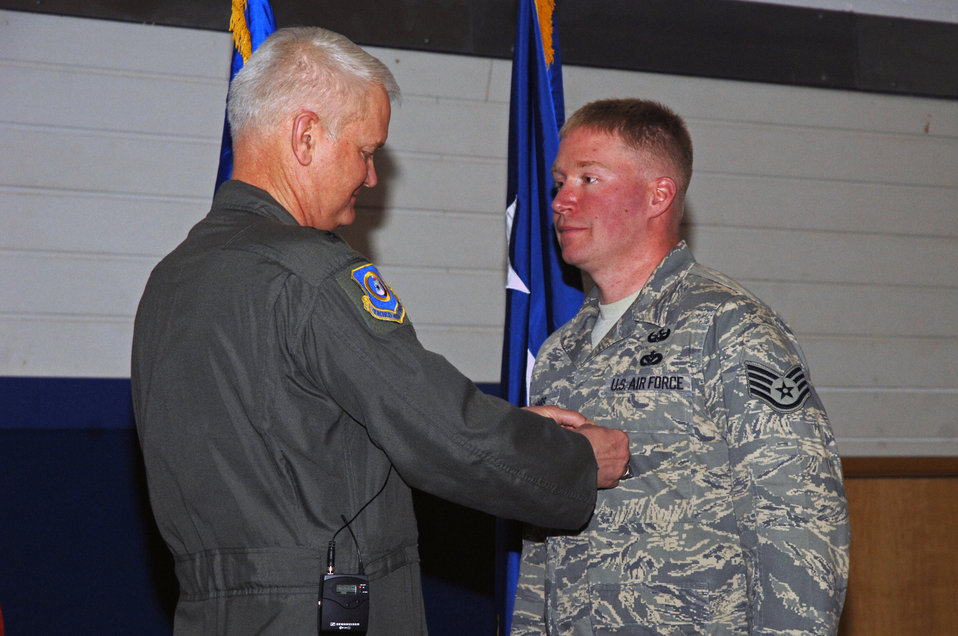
Airman identified

Staff Sgt. Phillip Myers, from the 48th Civil Engineer Squadron at Royal Air Force Lakenheath, England, shown above receiving the Bronze Star Medal from Lt. Gen. Robert D. Bishop, 3rd Air Force commander, on March 19, 2008, died April 4, 2009, near Helmand province, Afghanistan, of wounds suffered from an improvised explosive device.